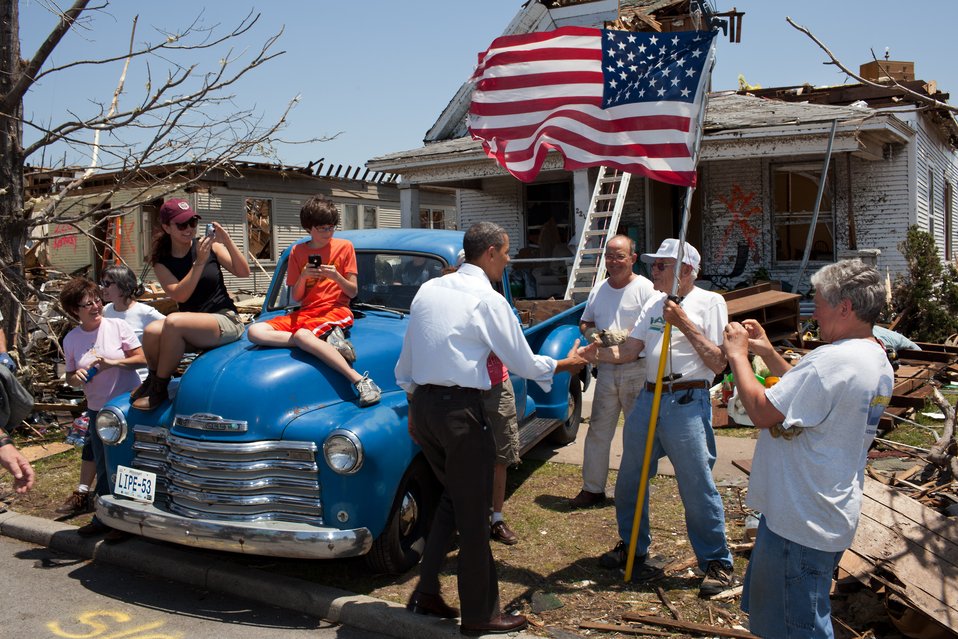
May 29, 2011
'The President visited Joplin, Mo., following a devastating tornado. Here he greets Hugh Hills, 85, in front of his home. Hills told the President he hid in a closet during the tornado, which destroyed the second floor and half the first floor of his house.'